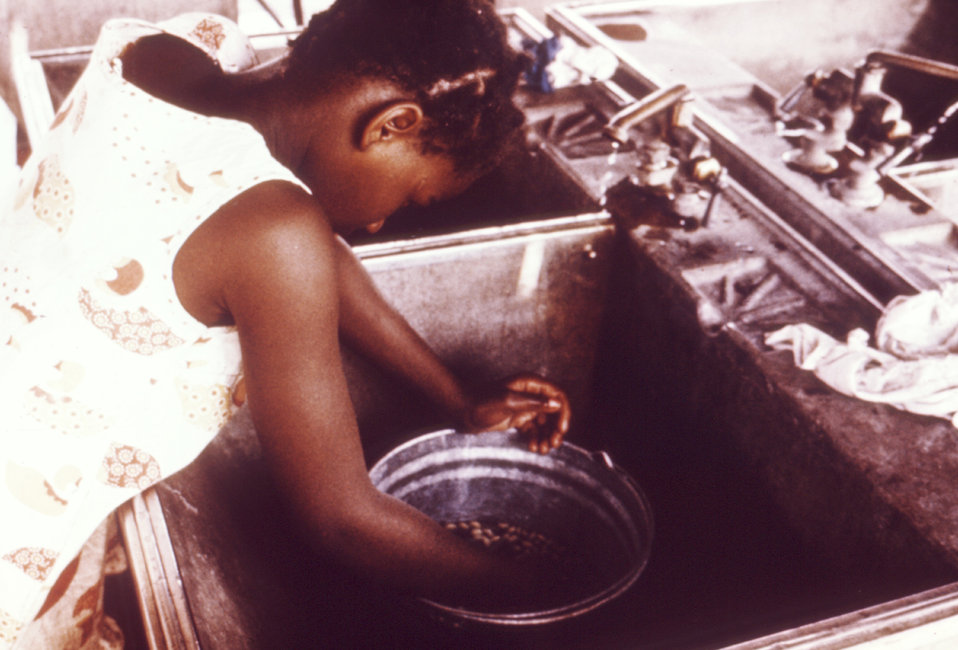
This was part of a series used to familiarize public health inspectors with sanitation conditions in migrant worker camps.